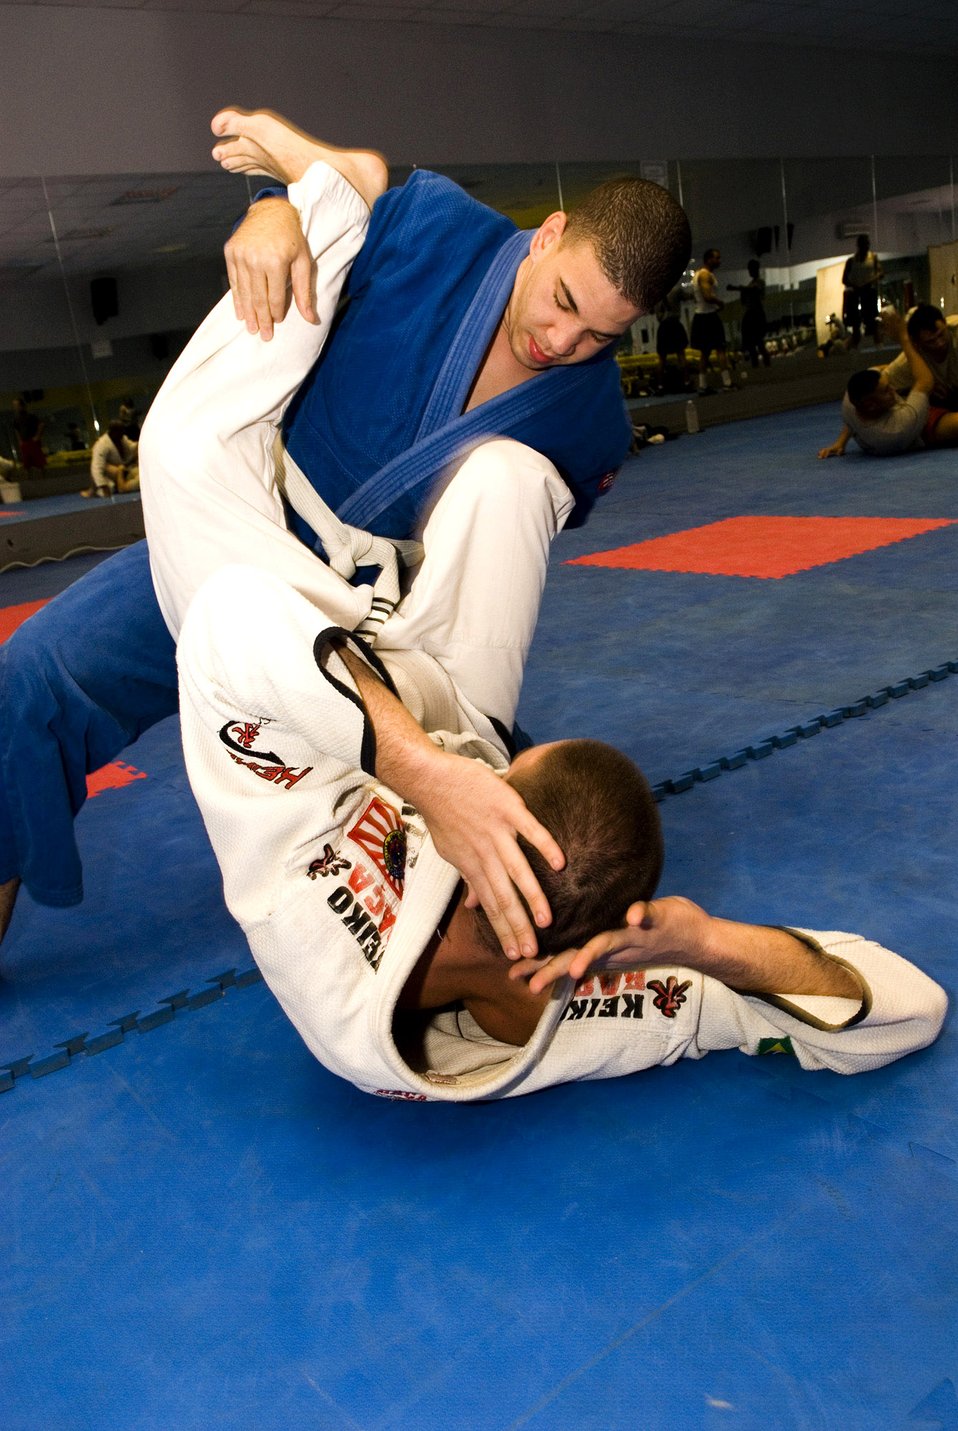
Fast as lightning

Staff Sgt. Aaron Drapeylo practices Brazilian Jiu-Jitsu with Senior Airman Edward Leeper at Balad Air Base, Iraq Dec. 3. Brazilian Jiu-Jitsu is a martial art form that focuses on grappling and locks. Both Airmen, deployed from Yokota Air Base, Japan, use the martial art as a form of exercise during their deployment.